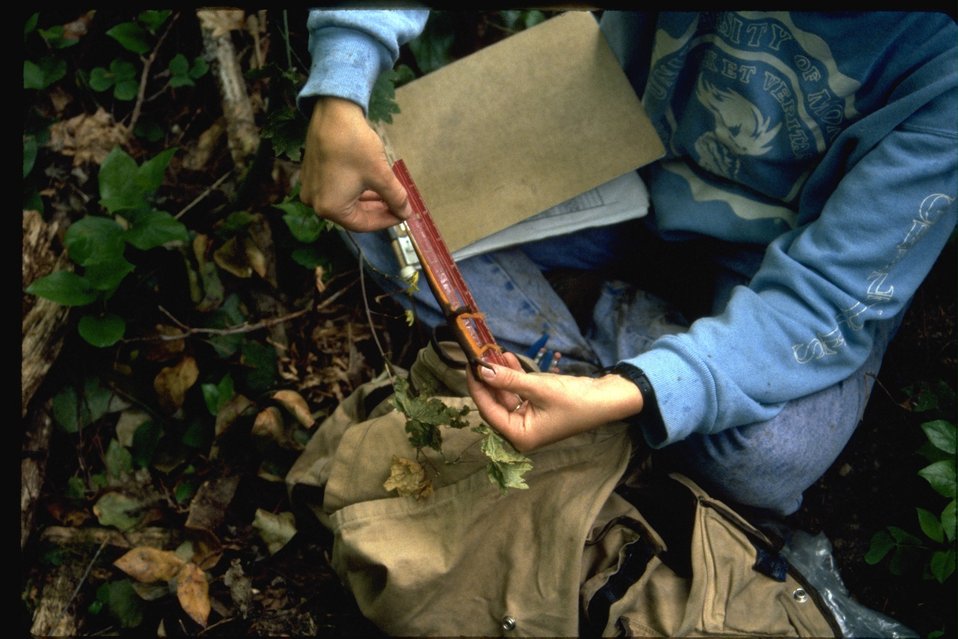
Wendy measuring a rough-skinned Newt.